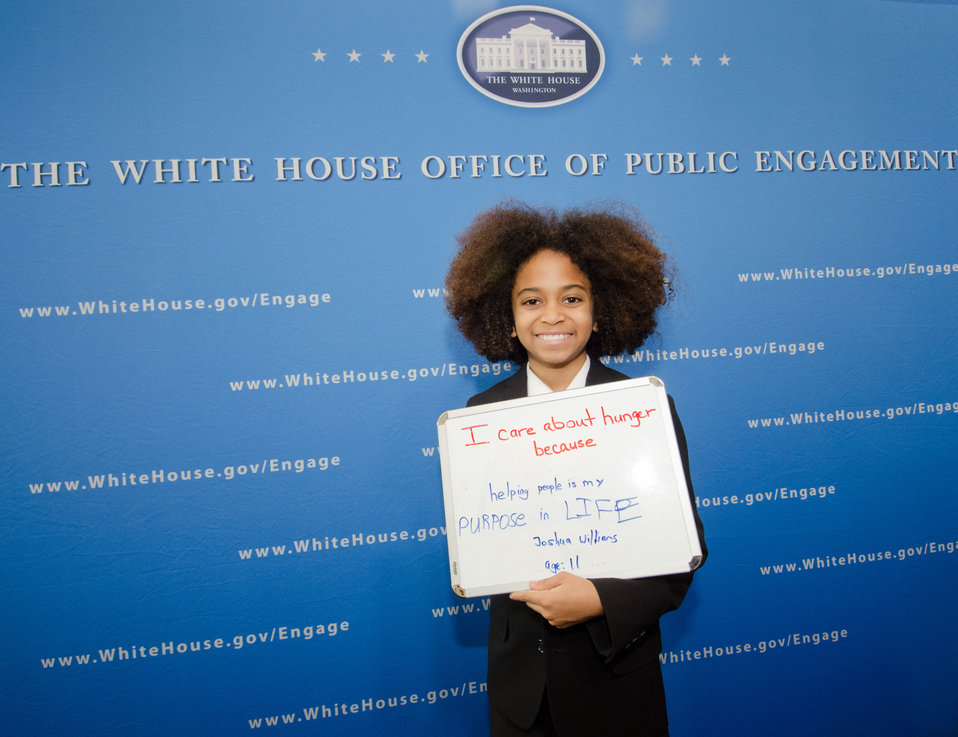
Joshua’s Heart Foundation President Joshua Williams wrote his comment to I care about hunger because... and held it up the board for photos, during an event recognizing his efforts to reduce hunger and increase food security in the U.S. and internationally at the White House Champions of Change Strengthening Food Security at Home and Abroad Event held at the White House on Thursday, September 6, 2012, in Washington, D.C.